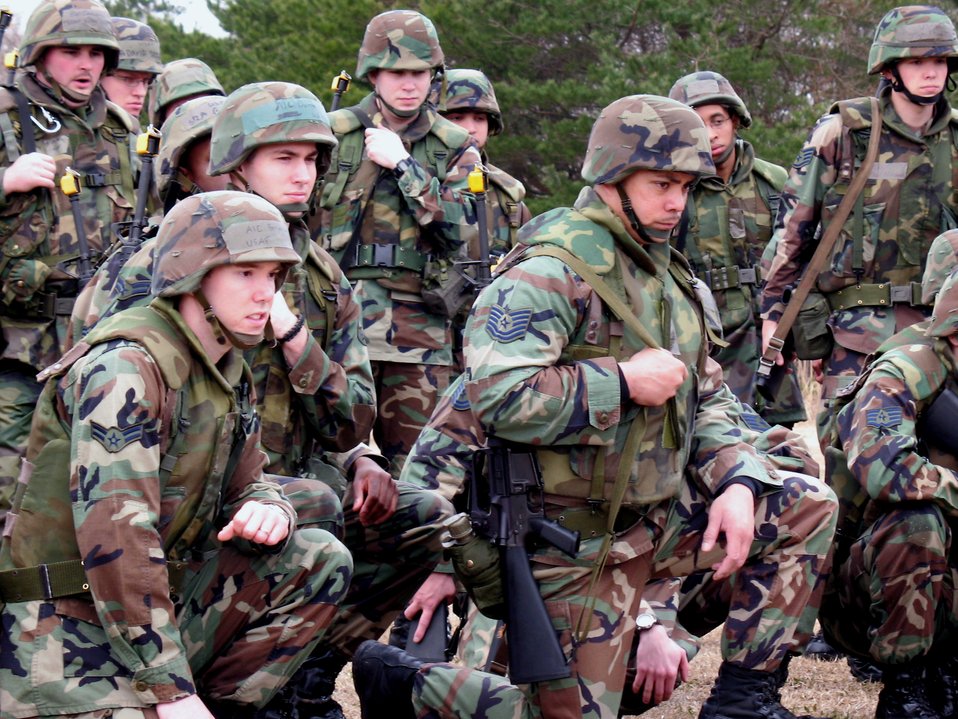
Combat skills training preps Airmen for war

Airmen participate in a field training exercise April 25 at Misawa Air Base, Japan. The Airmen practiced tactical maneuvers such as the low crawl and high crawl, and also became more familiar with M-16 rifles.